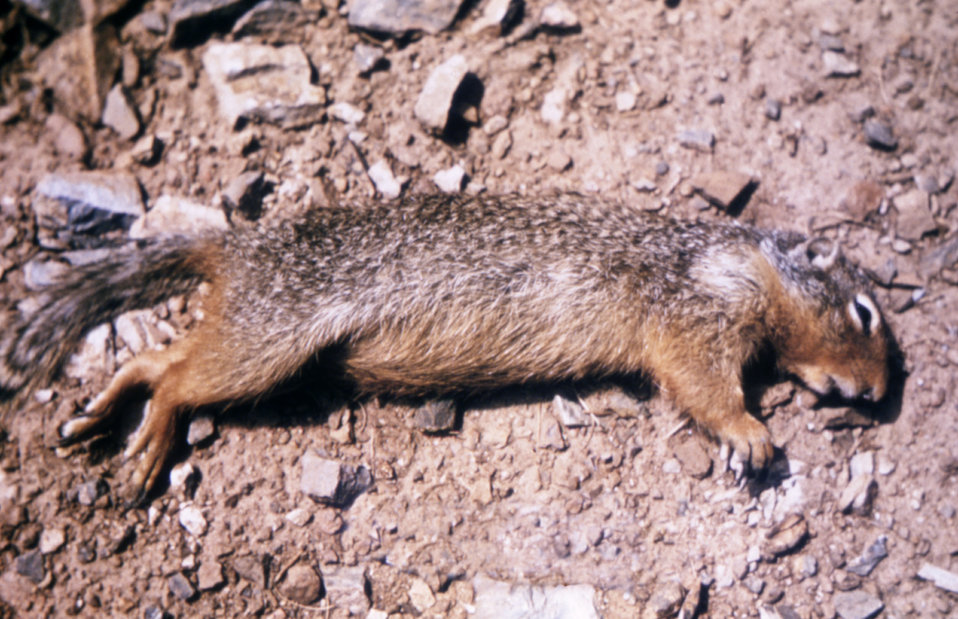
This photograph shows a ground squirrel that died due to a plague infection, Yersinia pestis.